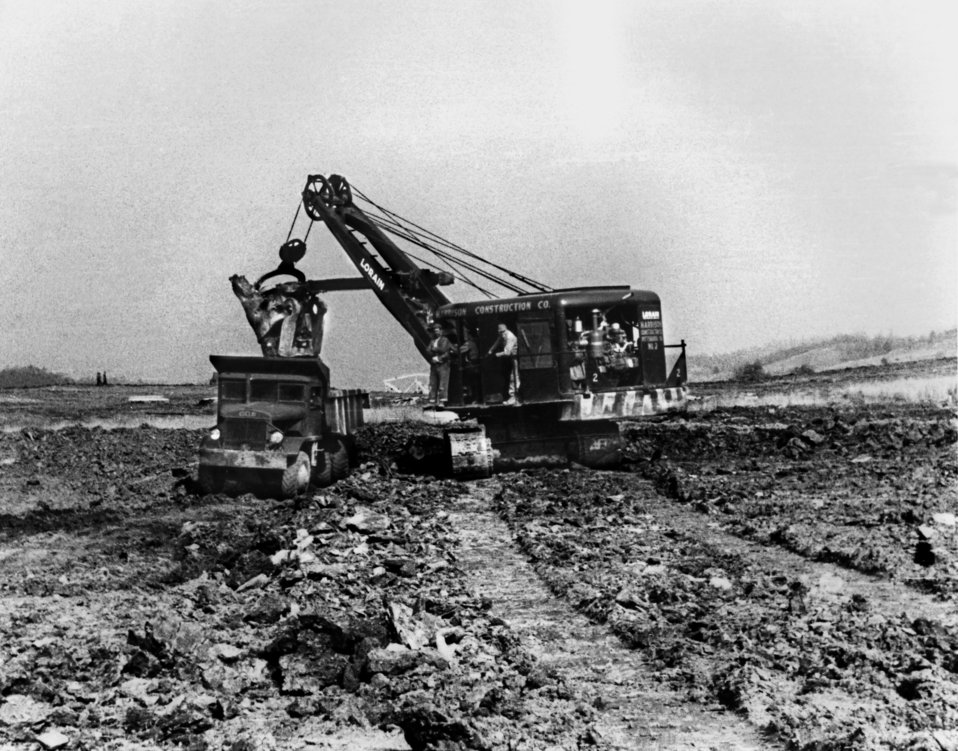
Ground breaking Oak Ridge

Roll 6-34 DOE photo Ed Westcott 2-20-43 Oak Ridge Tennessee